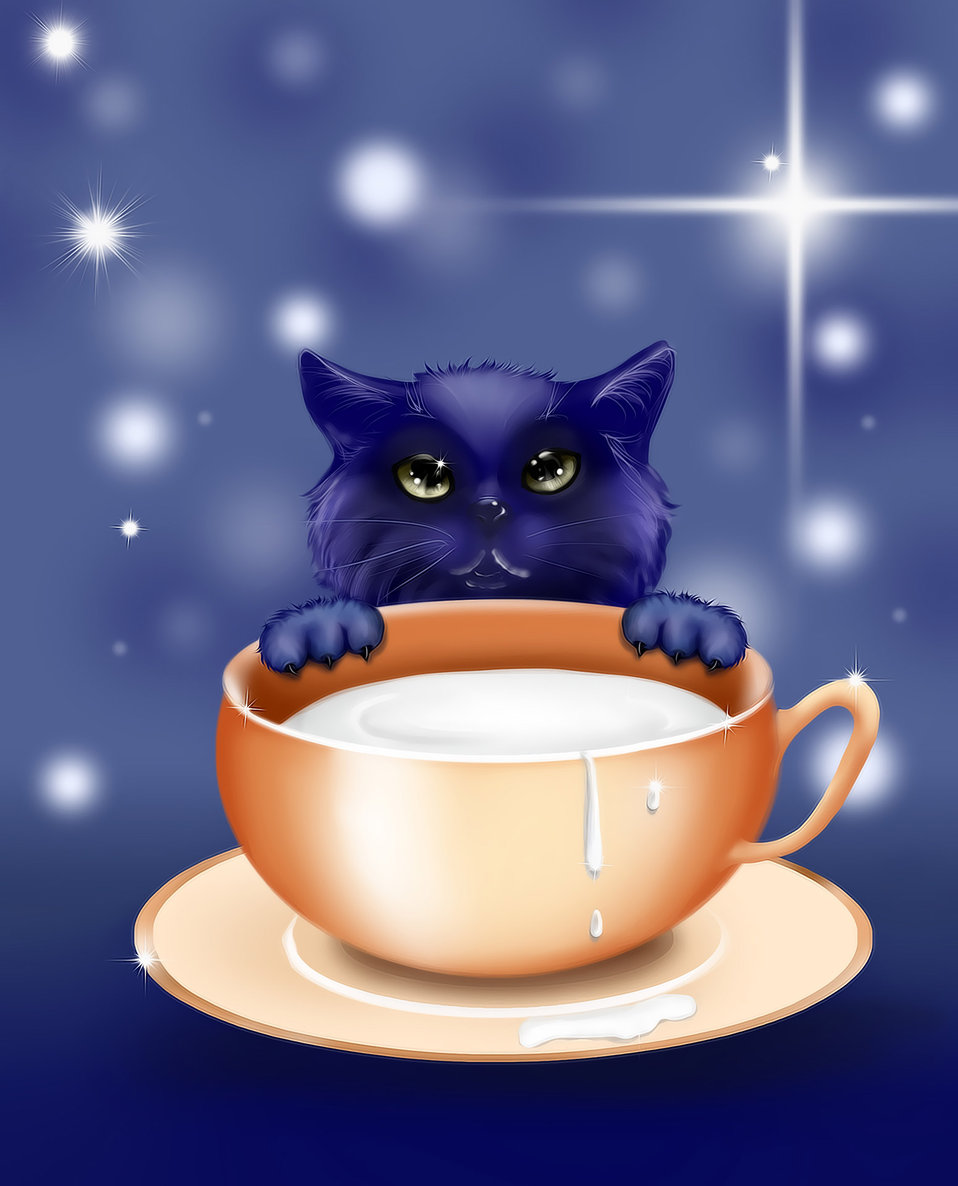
Little monkey

Little kitten eats milk, while no one sees..